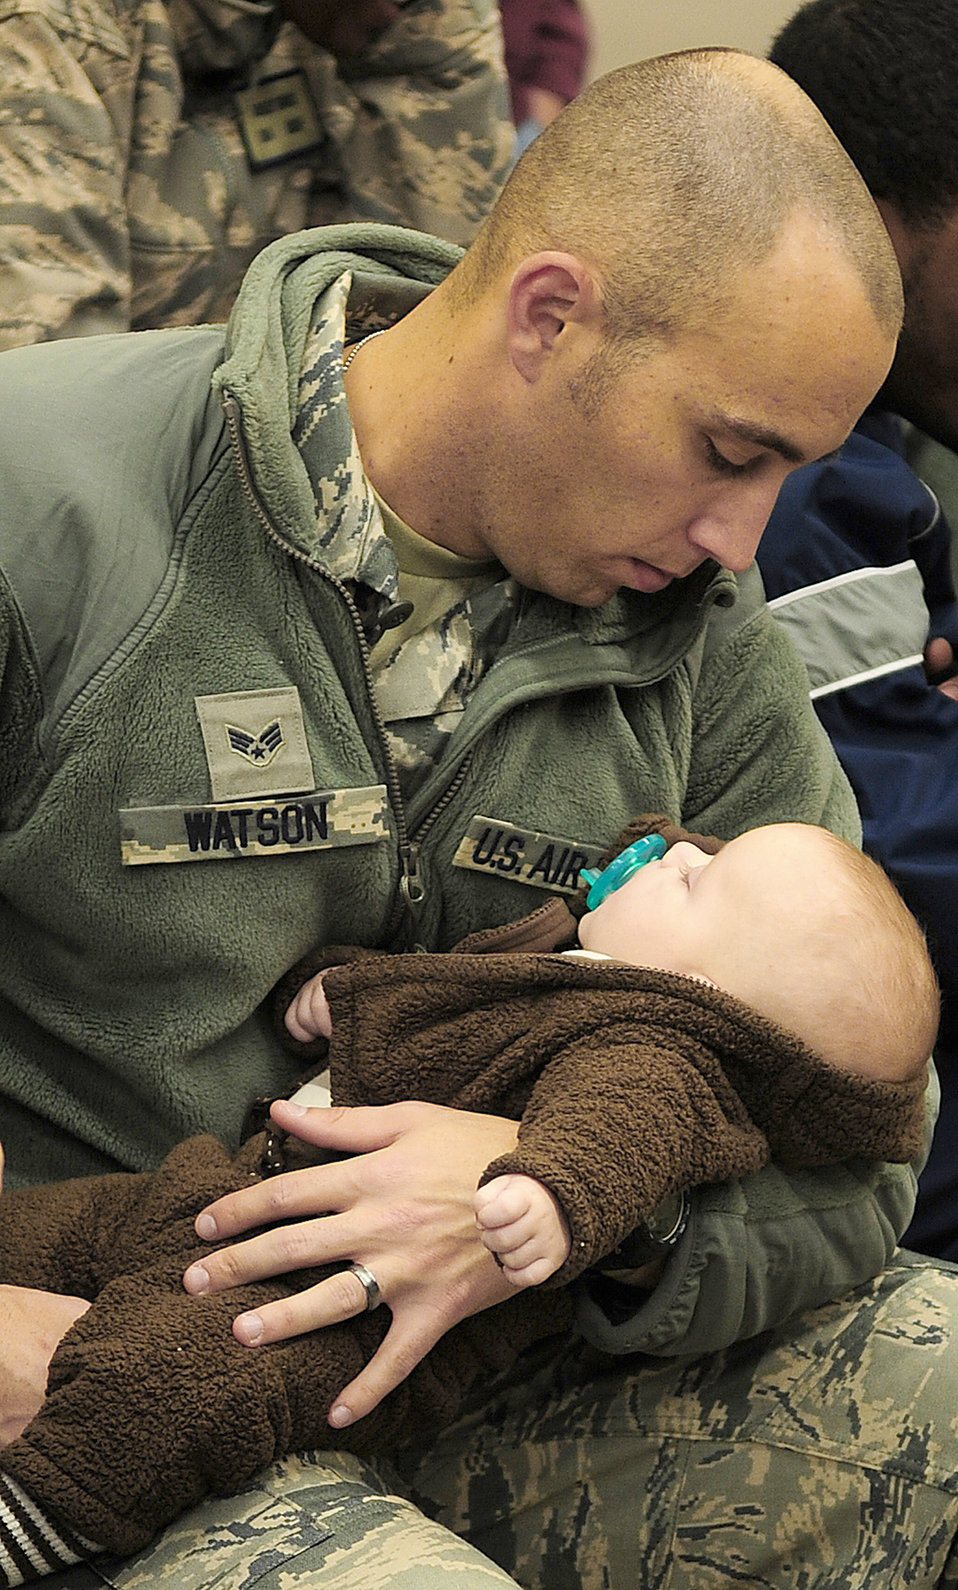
820th BDG

Senior Airman David Watson takes a moment to say goodbye to his 3-month-old son, Mikah, Dec. 6, 2010, at Moody Air Force Base, Ga. This is the first deployment to Afghanistan for the 820th Base Defense Group. Airman Watson is an 822nd Base Defense Squadron fire team member.